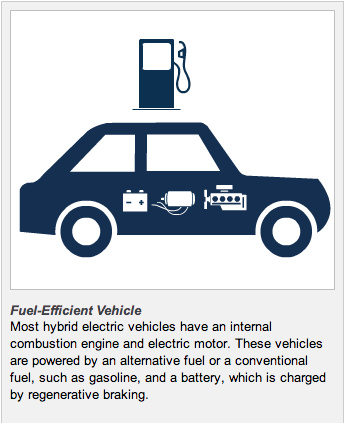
Hybrid Electric Vehicle

Most hybrid electric vehicles have an internal combustion engine and electric motor. These vehicles are powered by an alternative fuel or a conventional fuel, such as gasoline, and a battery, which is charged by regenerative braking.